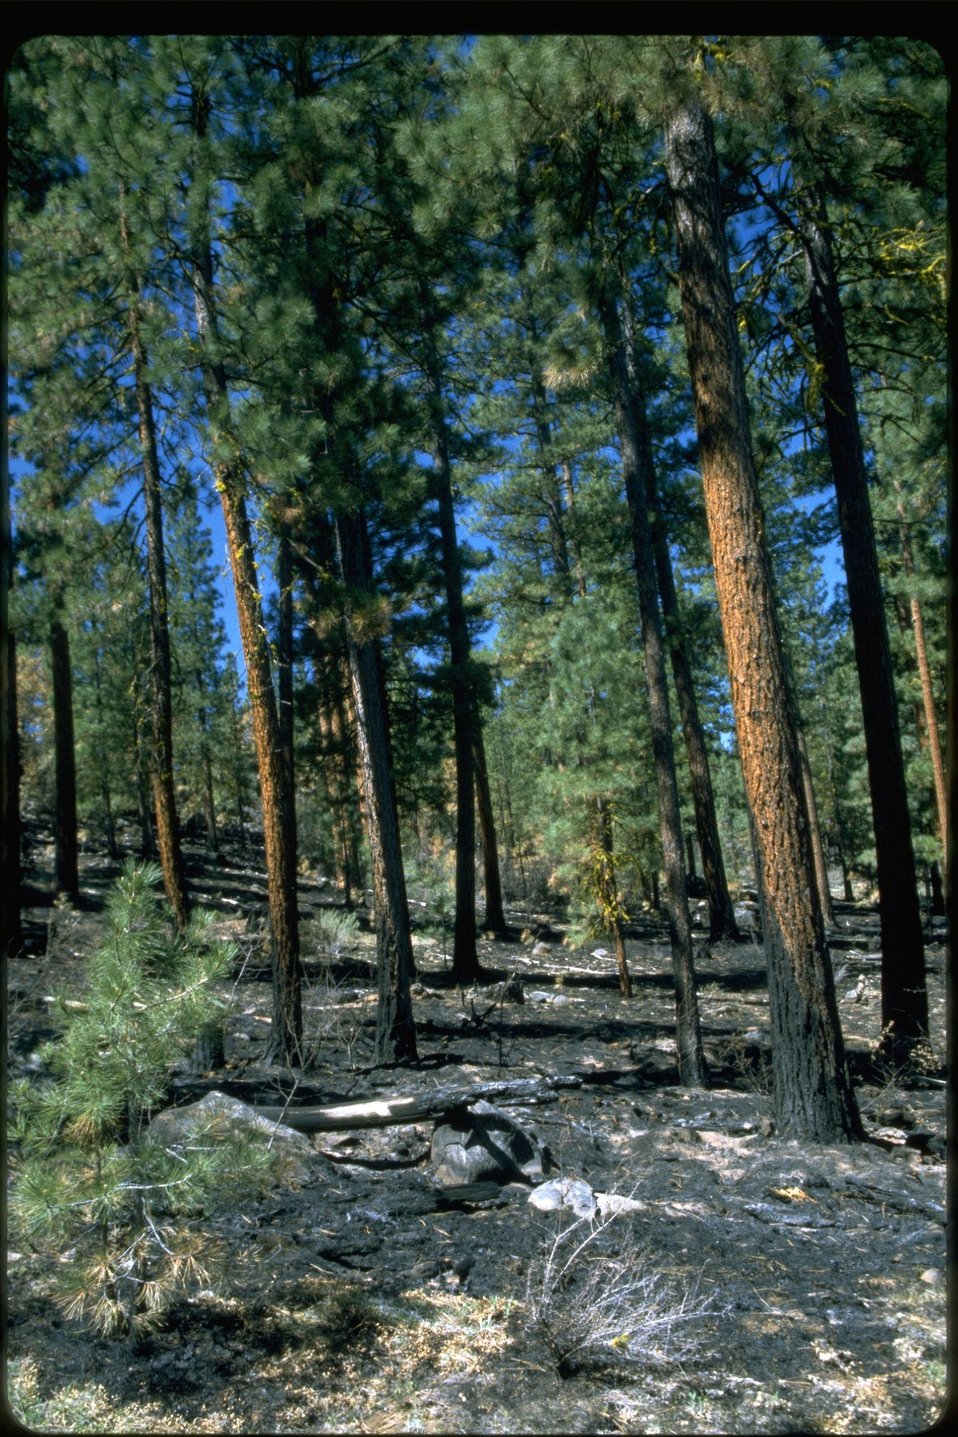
Prescribed burn area CCC (Civilian Conservation Corps) road near Barnes Valley.